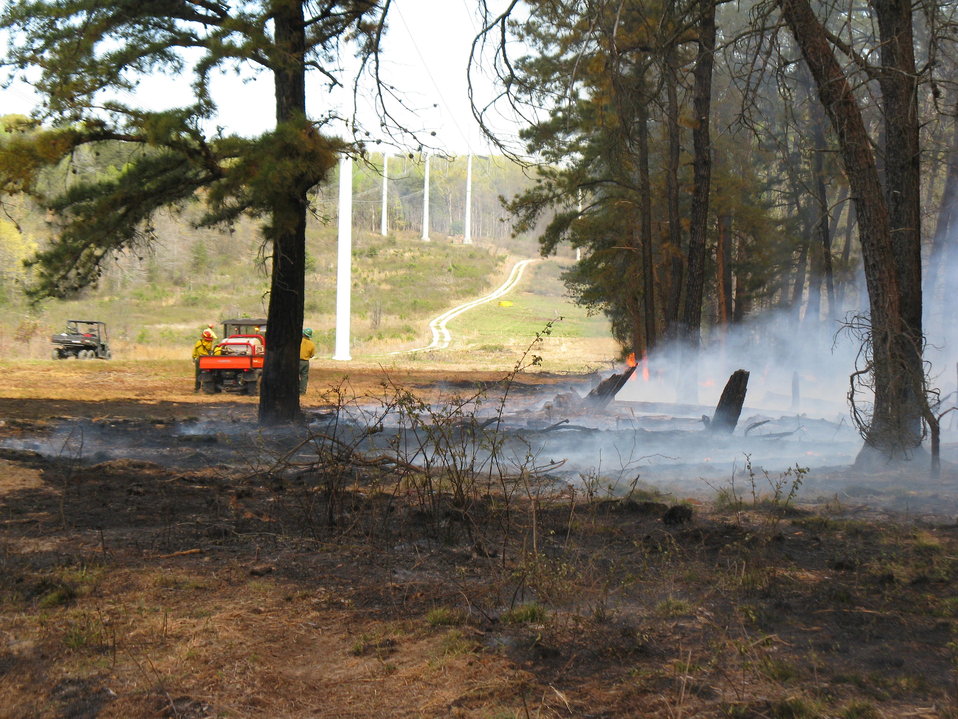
Along the Powerline

Laurel, Maryland, April 5, 2012: Smoke from a controlled burn to clear the understory wafts away from a powerline right of way. The burn was done at Patuxent Research Refuge's Savannah Restoration Unit to increase refuge species and habitat diversity. Specifically, the refuge hoped to increase density and diversity of rare darkling beetles and forest floor plants.